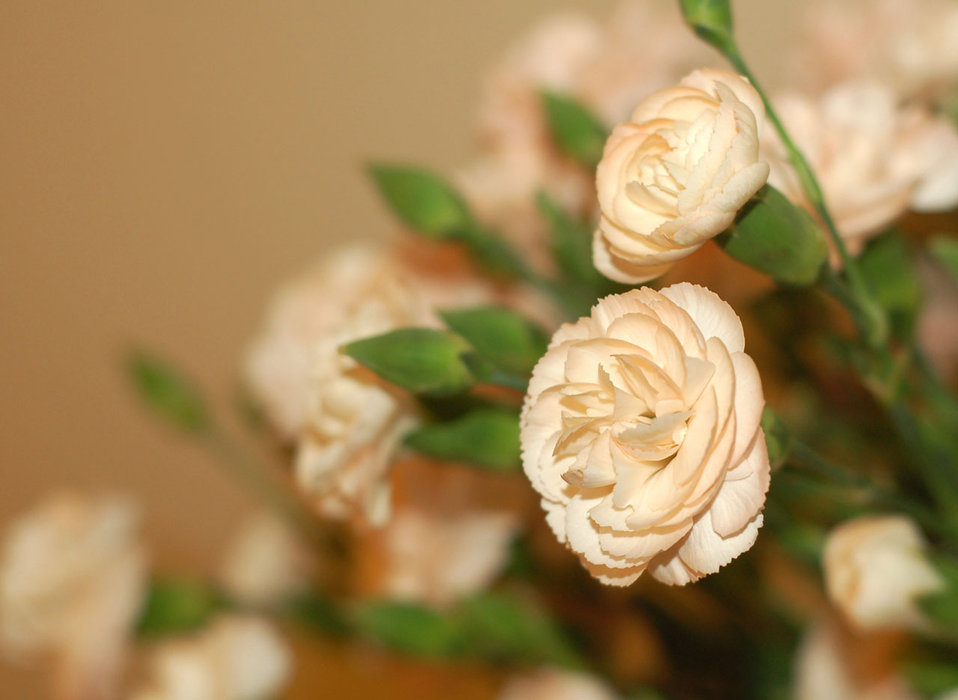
Carnations

Pale pink carnations.